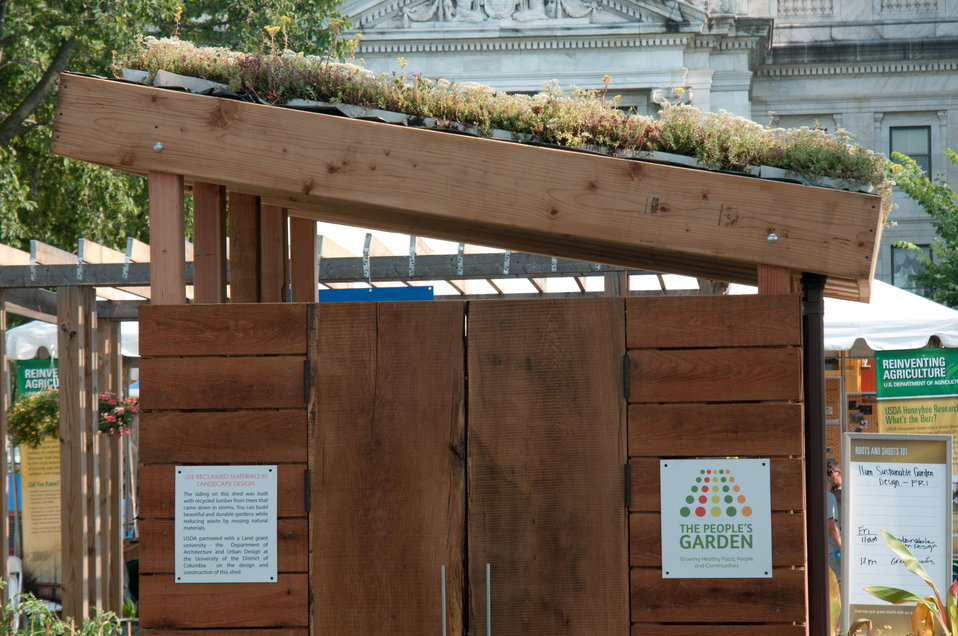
U.S. Department of Agriculture (USDA), People’s Garden Initiative, Green Roof Shed at the 2012 Smithsonian Folklife Festival, on the National Mall in Washington, D.C., on Thursday, June 28, 2012. The siding on this shed is made of recycled lumber from trees that came down in storms. Green roofs are attractive, practical benefits include additional thermal protection, noise reduction and increase the life expectancy of the roof. U.S. Department of Agriculture (USDA) partnered with the University of the District of Columbia’s (UDC), Department of Agriculture and Urban Design on the design and construction of this shed. UDC is a Land Grant university. For more information and answers to questions such as how do you build a roof to accommodate a green roof? And is it possible to modify an already built roof to add a green roof? Go to blogs.usda.gov/2012/07/05/going-green-green-roofs-and-rai... One of the three themes this year is “Campus and Community.” It celebrates the 150 years of the USDA and the Land-Grant University System. The U.S. Department of Agriculture (USDA) and the Land-Grant system extend education across the country, contributing to American agriculture success and rural prosperity. “Campus and Community” has demonstrations, discussions, hands-on activities, and entertainment to that showcase the many ways that this partnership works to improve American agriculture and rural life.